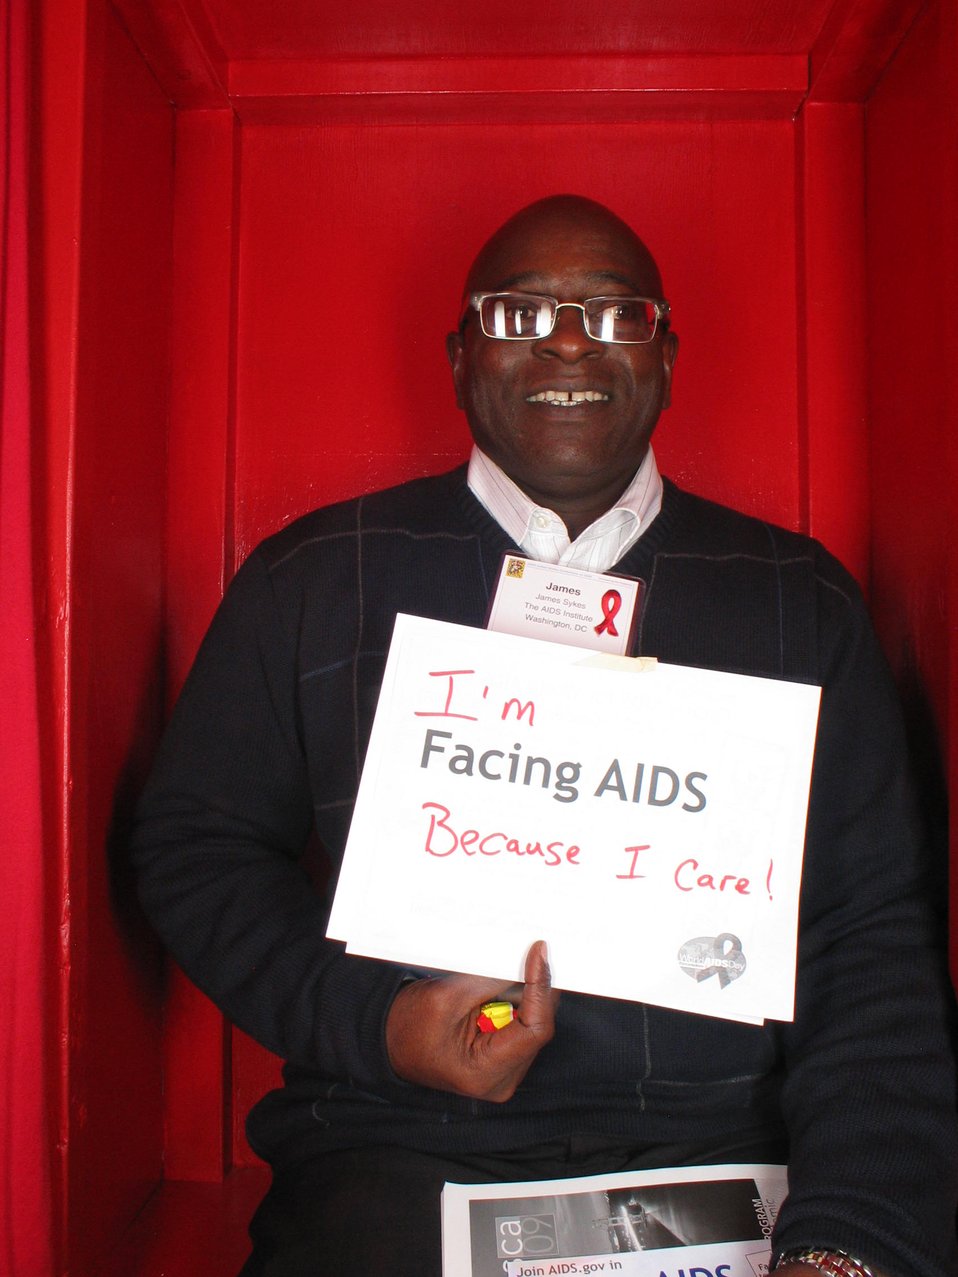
I'm Facing AIDS because I care!